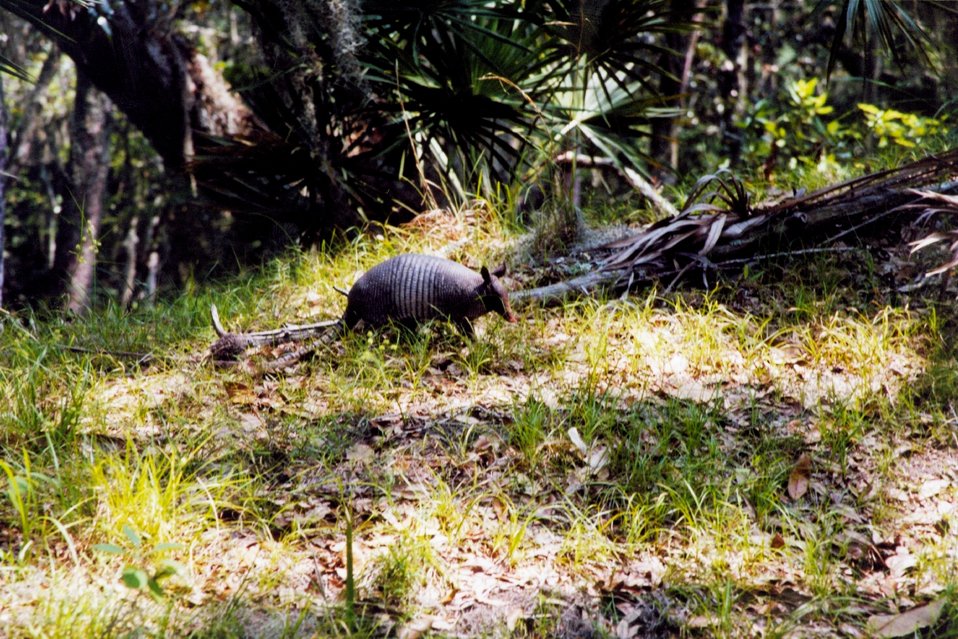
An armadillo with oaks and palmettos in the background.